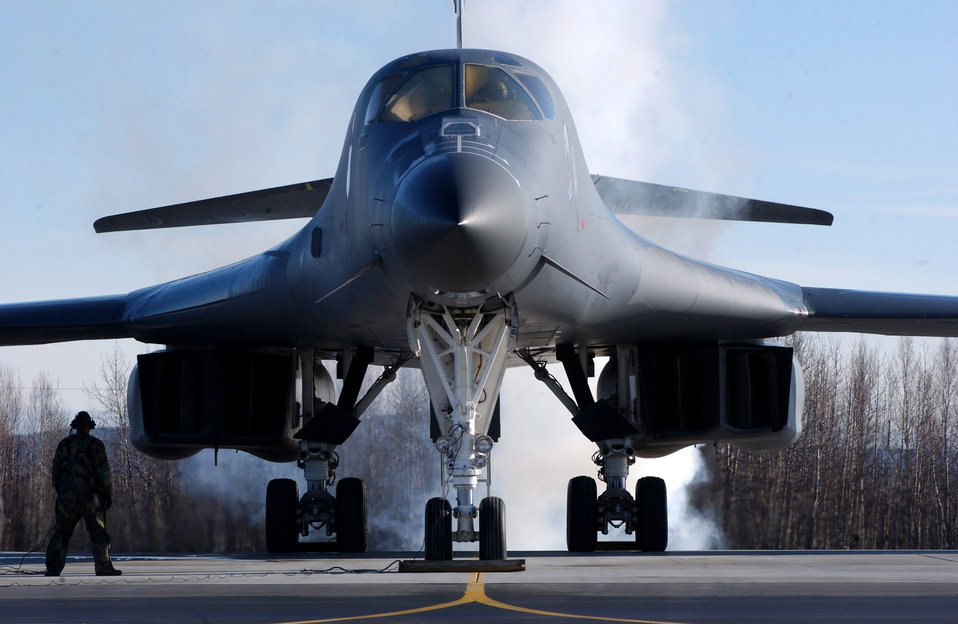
Air combat ready at Red Flag-Alaska

A B-1B Lancer from Ellsworth Air Force Base, S.D., starts its engine April 13 at Eielson AFB, Alaska, during Red Flag-Alaska 07-1. Red Flag-Alaska is a Pacific Air Forces-directed field training exercise for U.S. forces flown under simulated air combat conditions. It is conducted on the Pacific Alaskan Range Complex with air operations flown out of Eielson and Elmendorf Air Force Bases.